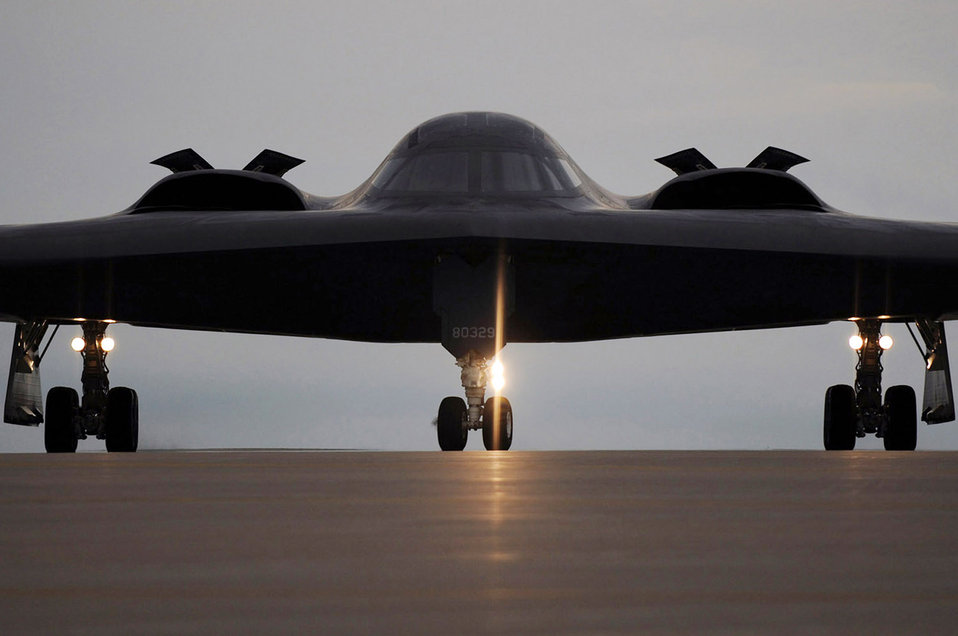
The B-2 'Beast Walk'

The B-2